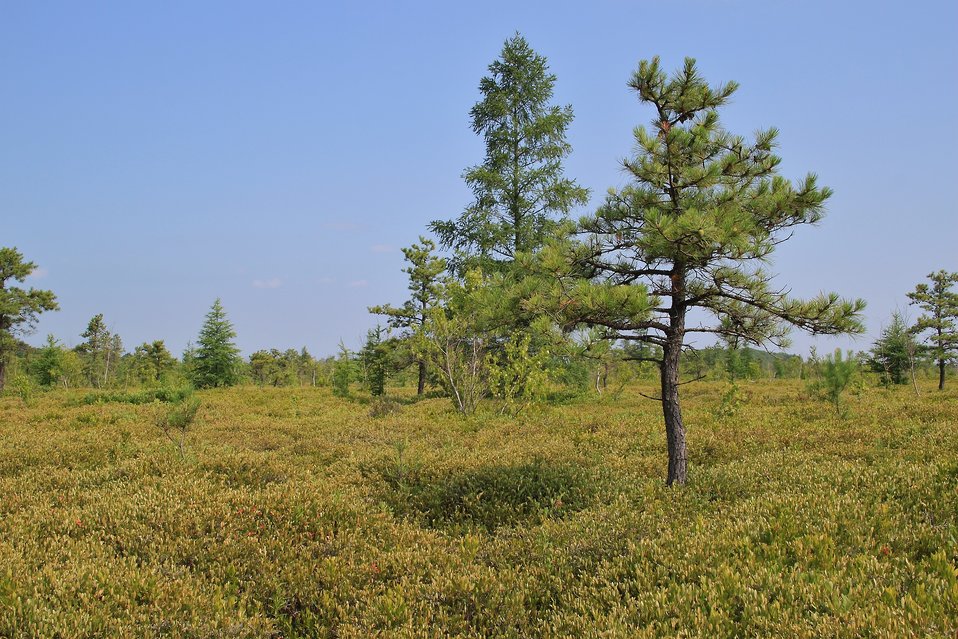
Maquam Bog at Missisquoi National Wildlife Refuge